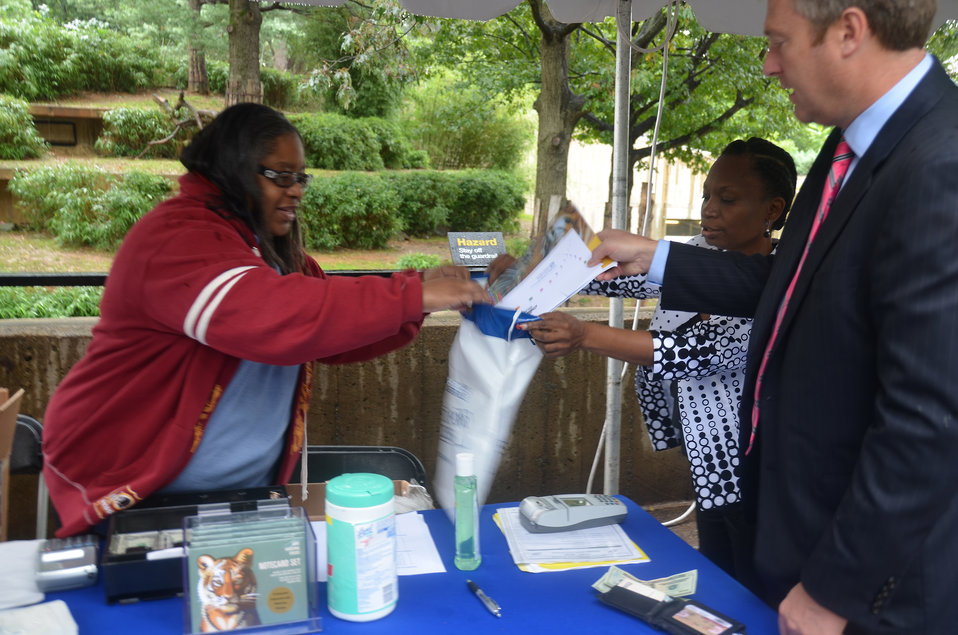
Save Vanishing Species Stamp First Day of Issue